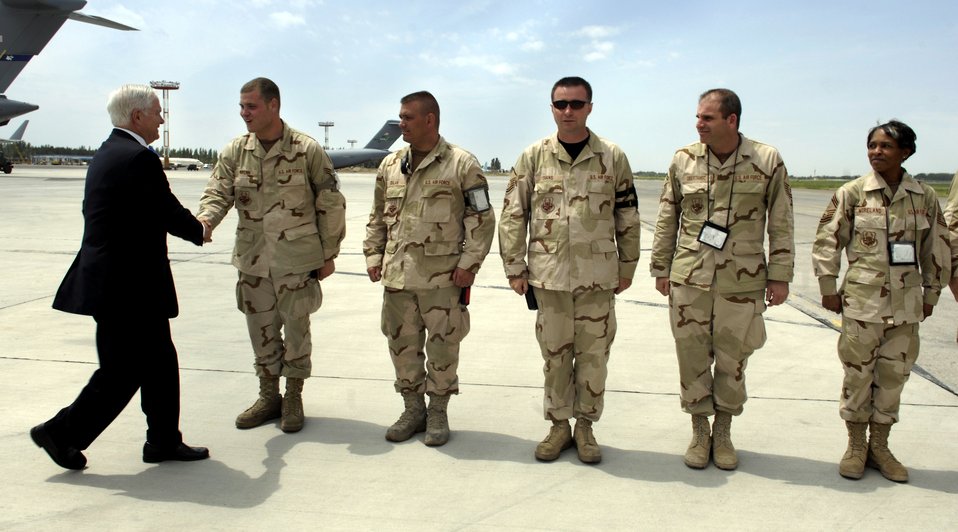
Secretary Gates pays a visit

Secretary of Defense Robert M. Gates meets Airmen deployed to Manas Air Base, Kyrgyzstan, June 5. During the trip, he took the opportunity to hear directly from the troops about their concerns and to answer their questions.